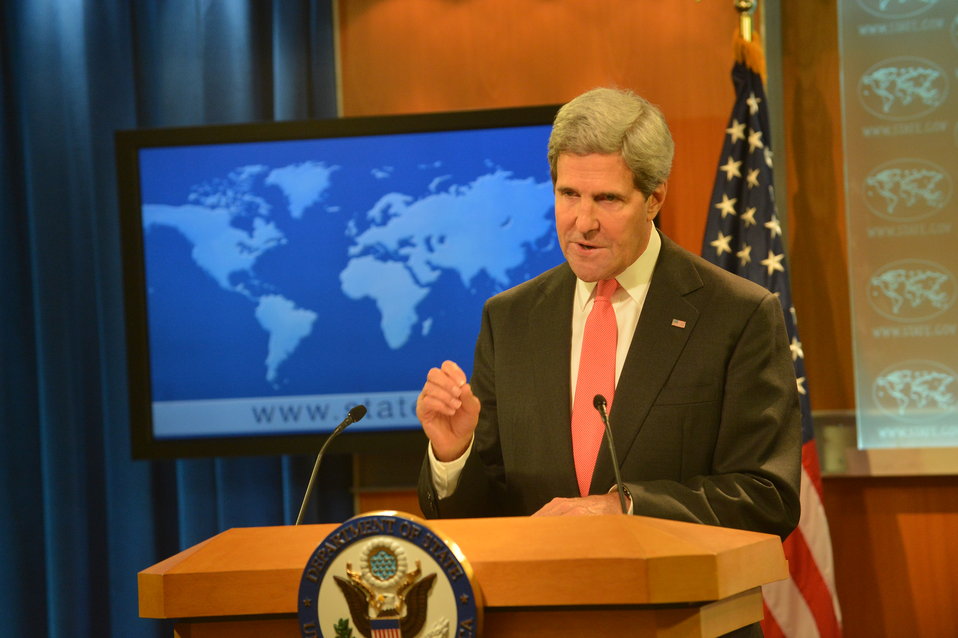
Secretary Kerry Makes a Statement to the Press on Syria and the UN

U.S. Secretary of State John Kerry makes a statement to the press on Syria and the United Nations at the U.S. Department of State in Washington, D.C., on September 19, 2013.